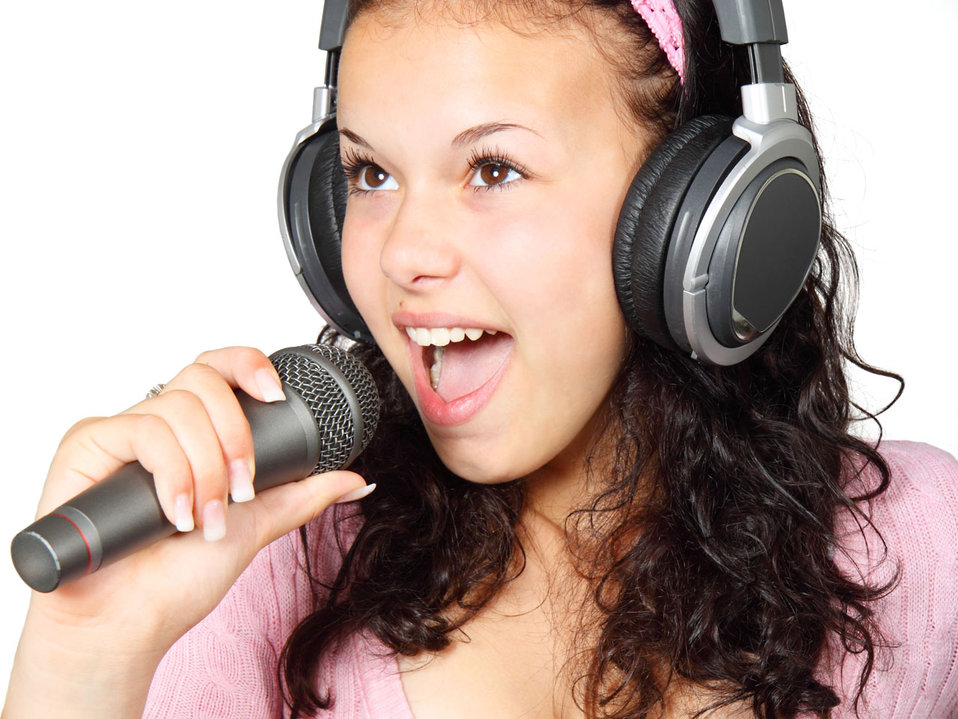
Woman singing along

Young woman singing with microphone and headphones.